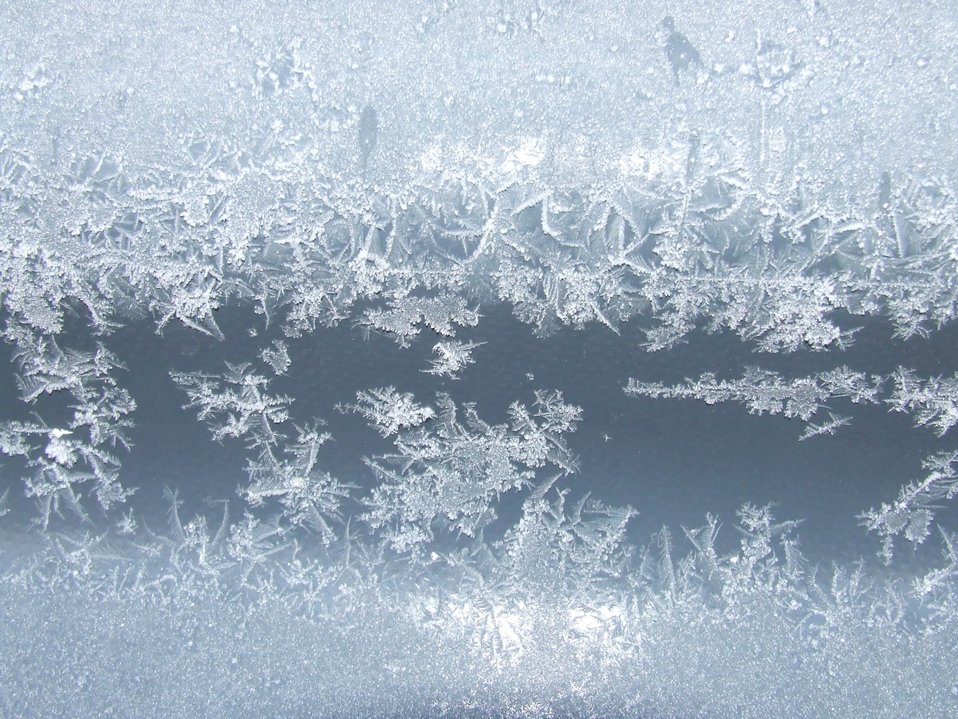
Ice crystals texture.